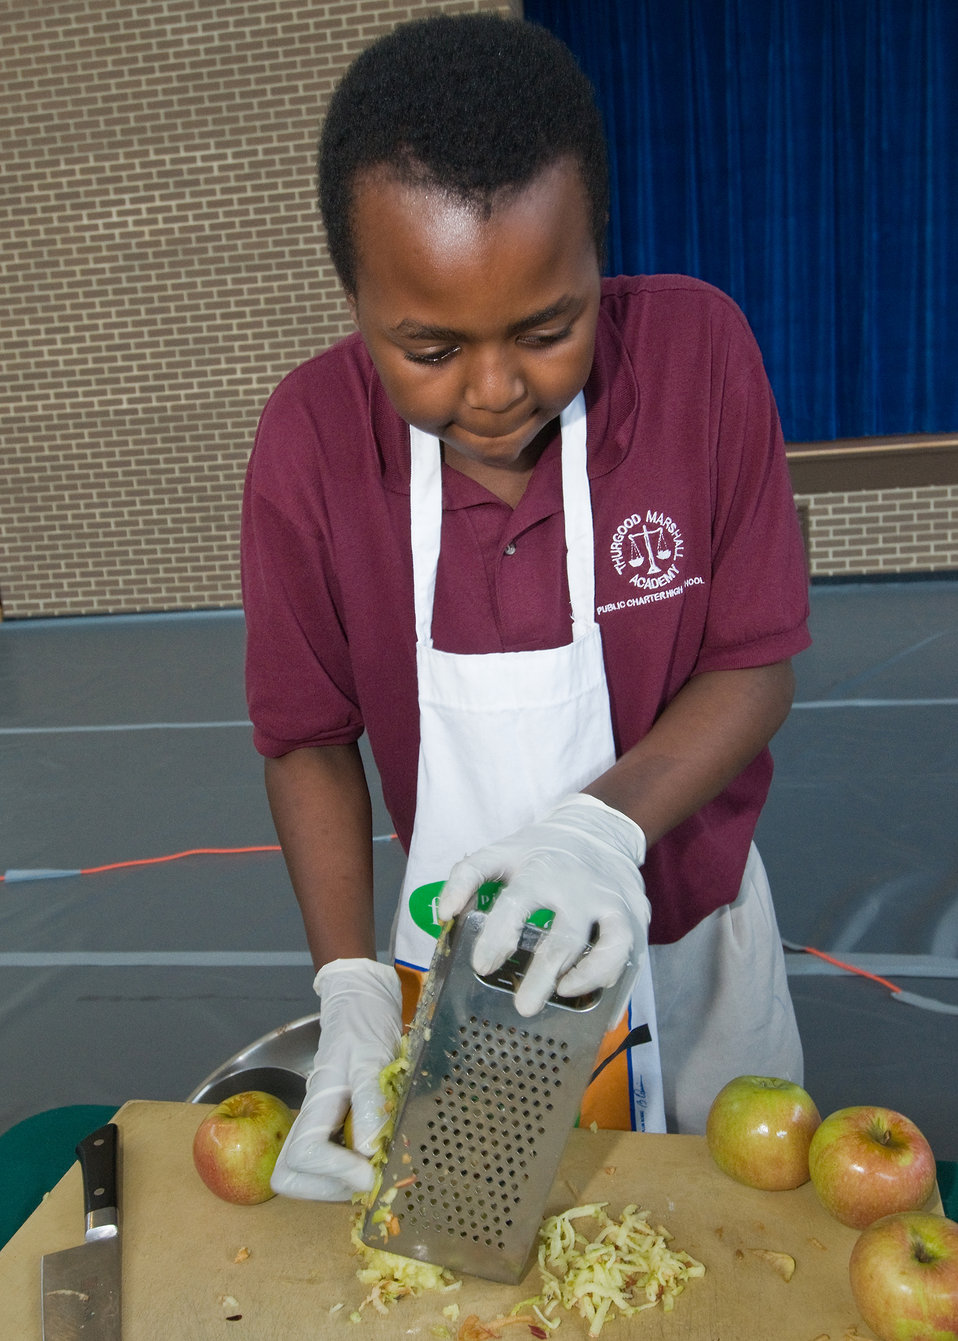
Darvel Suggs a sophomore at Thurgood Marshall Academy shreds apples for, 'Apple Raisin Flap Jacks with Apple Syrup' the recipe he prepared with Chef Will Artley, 'Evening Star Cafe' for the Chef Competition of the D.C. Farm to School and D.C. School Garden Week at the Savoy Elementary and Thurgood Marshall Academy shared campus in Washington, DC, Tuesday, October 12, 2010. At the event related to the Iron Chef competition local chef’s and student sous chef’s created healthy, delicious recipes using local apple varieties to be judged by the students themselves. School children and a partnership of community organizations have responded to First Lady Michelle Obama’s goal to end childhood obesity by building school gardens, providing healthier foods in school meals, and helping kids connect with local food and agriculture. USDA Photo 10di1522-54 by Bob Nichols.